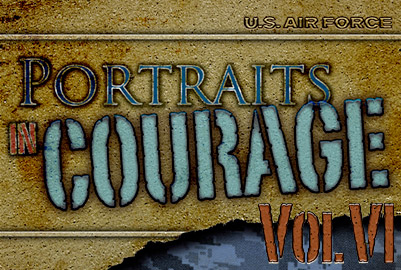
Portraits in Courage